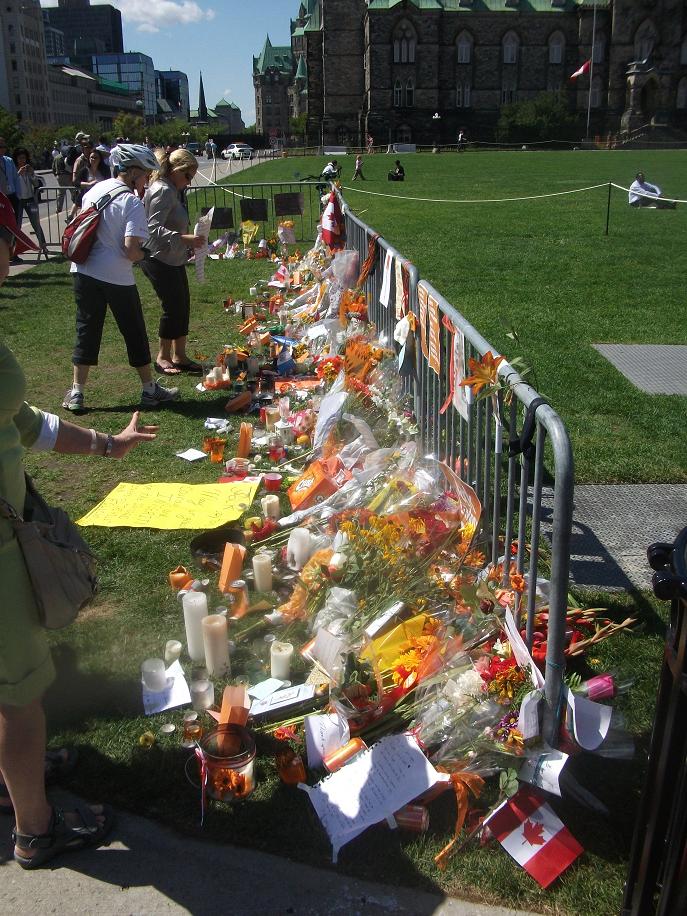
Summary: Makeshift memorial to Jack Layton, centennial flame in Ottawa